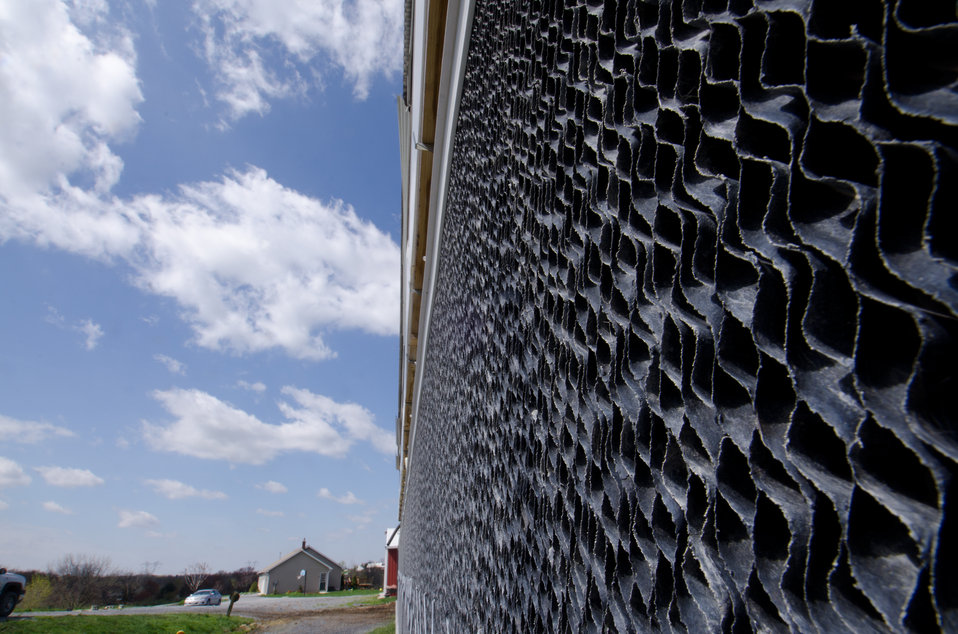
Evaporative cooling element recycles water through these elements to capture heat from the air drawn through them at the Roxanne Molnar Farm in Grantville, PA, on Thursday, April 21, 2001. Roxanne and Matthew Molnar have an 80,000 chicken poultry farm that received a $20,000 Rural Energy for America Program (REAP) grant. The money is a portion of the cost to modernize the second of two 40,000 chicken capacity chicken houses. Chickens need to be kept at a comfortable temperature to remain productive. New radiant heaters keep the chickens warm during Pennsylvania winters. On warm days, ceiling vents provide passive venting of heat out of the building; when chicken house temperatures are estimated to be above 90 degrees, fans come on, pulling air through water evaporator elements lowering air temperature down 10-15 degrees and flows along the chicken house's length, in effect a tunnel of cooled air. The benefits to the chickens are heat and excess moisture removal; minimized dust and odor; limits buildup of ammonia and carbon dioxide; and provides oxygen for respiration. All these systems are computer controlled allowing owner, Roxanne Molnar to run the farm by herself and raise two small boys Gavin (2) and Grant (5). Husband, Matthew works off the farm and frequently travels, so along with the demands of parenting and manually controlling fans, vents, and having to remove the 80,000 chickens from their feeders and moving them around to cool them was an increasingly daunting task. The computer controls of the new system automate many of the daylong tasks allowing the Molnar’s to run their family farm. USDA Photography by Lance Cheung.